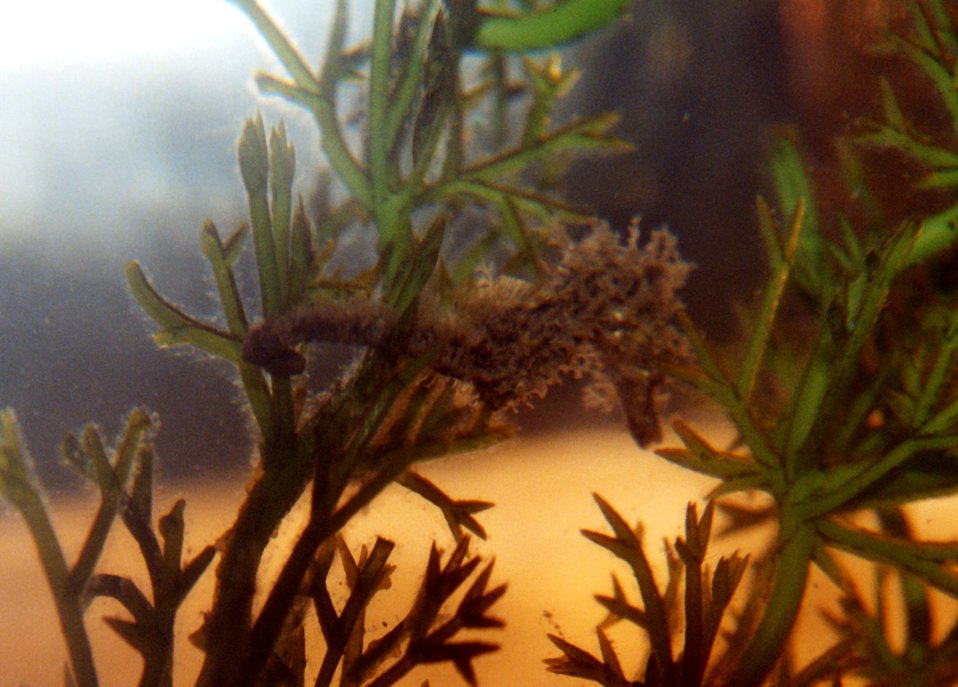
Can you find the seahorse? Young seahorse found in the Patuxent River.